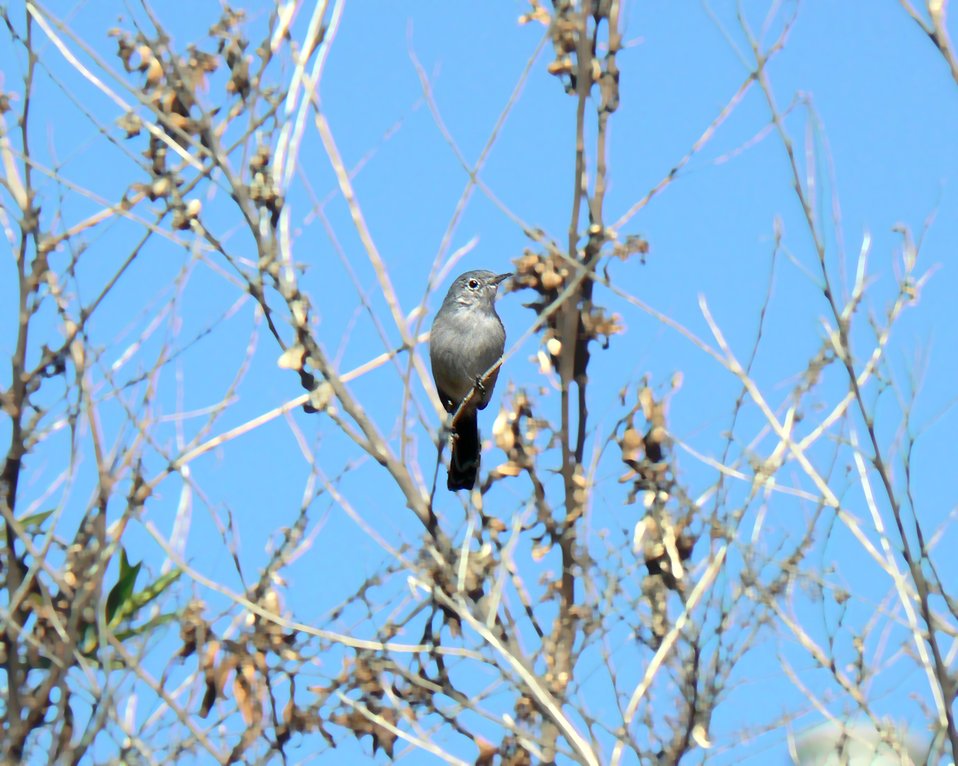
Coastal California Gnatcatcher

The coastal California gnatcatcher is a small insect-eating bird. This species is found primarily in the coastal sage scrub plant community, although it also occurs in chaparral habitat.

It's range includes southern California south to northwestern Baja California, Mexico.